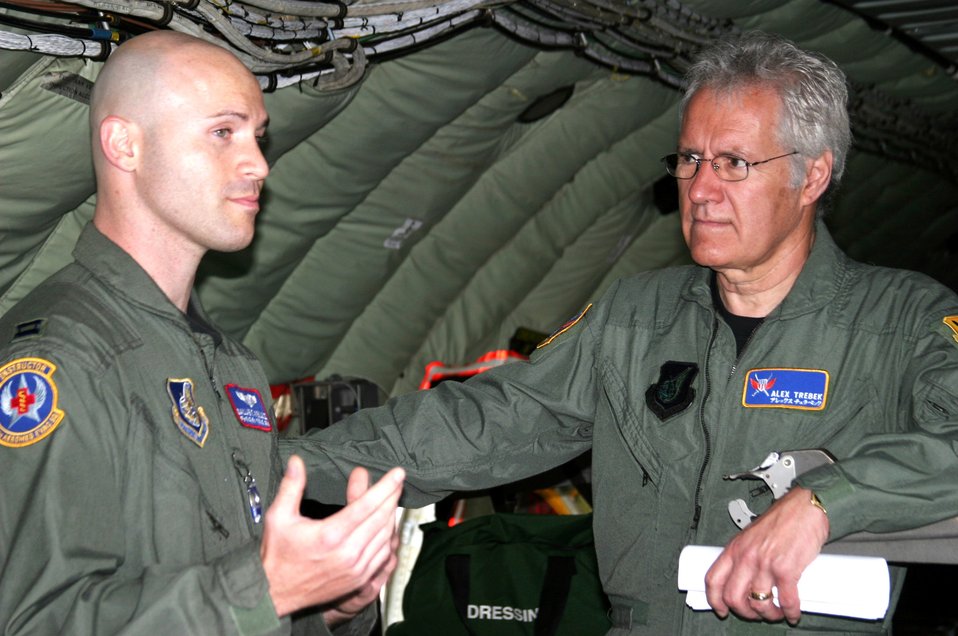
Kadena members may be in 'Jeopardy'

Alex Trebek listens as Capt. Dallas Weills explains how KC-135 Stratotankers can fly critical-care patients to hospitals in the United States March 31 at Kadena Air Base, Japan. Captain Weills is an in-flight medic with the 18th Aeromedical Evacuation Squadron. During a two-day